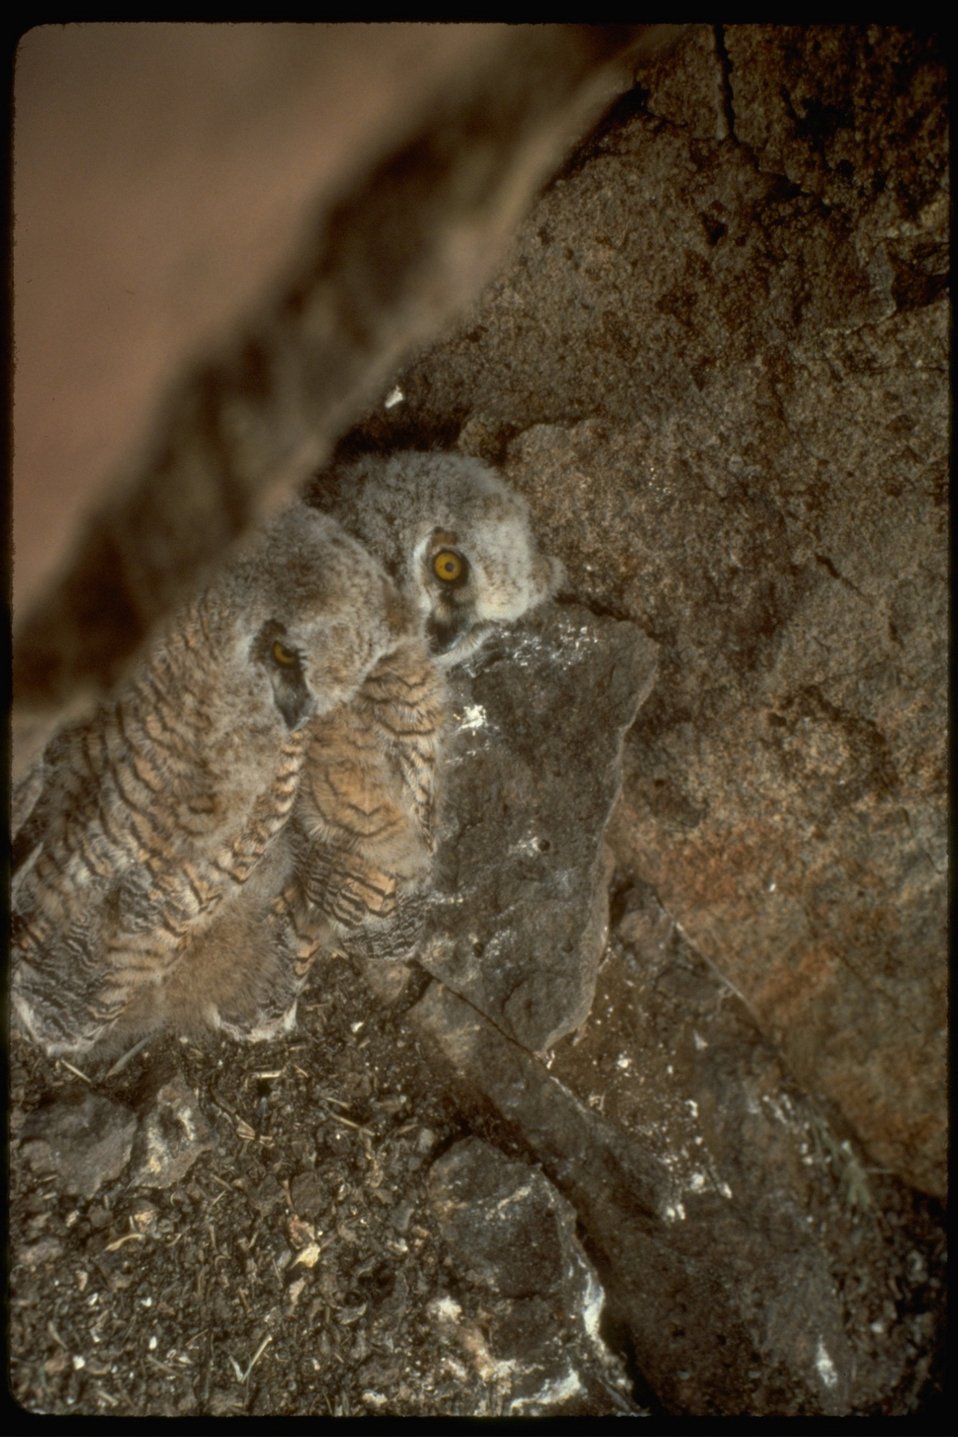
Two Great Horned Owls in the Blitzen River Wilderness Study Area. OR 2-86E